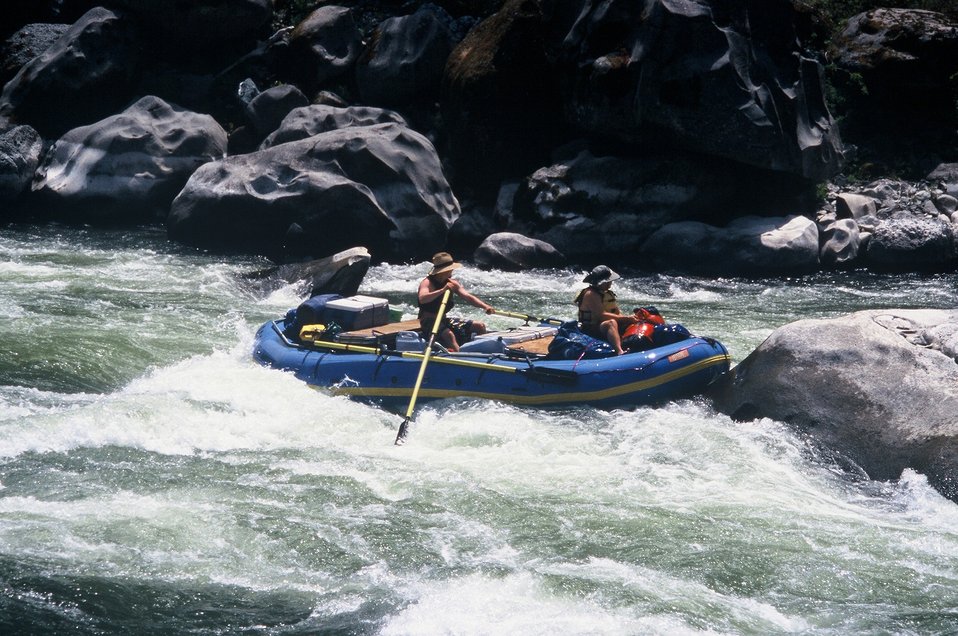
Wild section of the Rogue River from Grave Creek to Foster Bar May 19 to May 22.